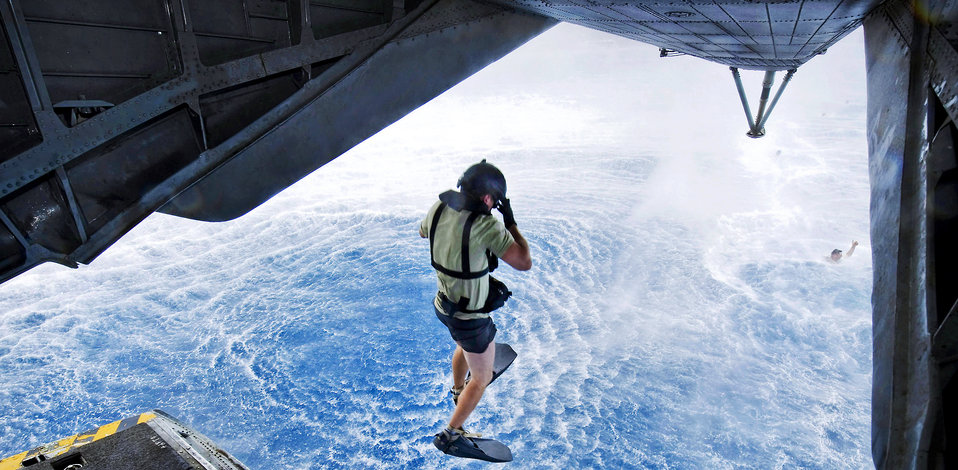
Take a deep breath

An Airman jumps from the back of a Marine Corps CH-53E Super Stallion helicopter during a training mission May 1, 2010, off the coast of Djibouti, Africa. The Airman, who works as a pararescueman, is assigned to Camp Lemonnier, Djibouti.